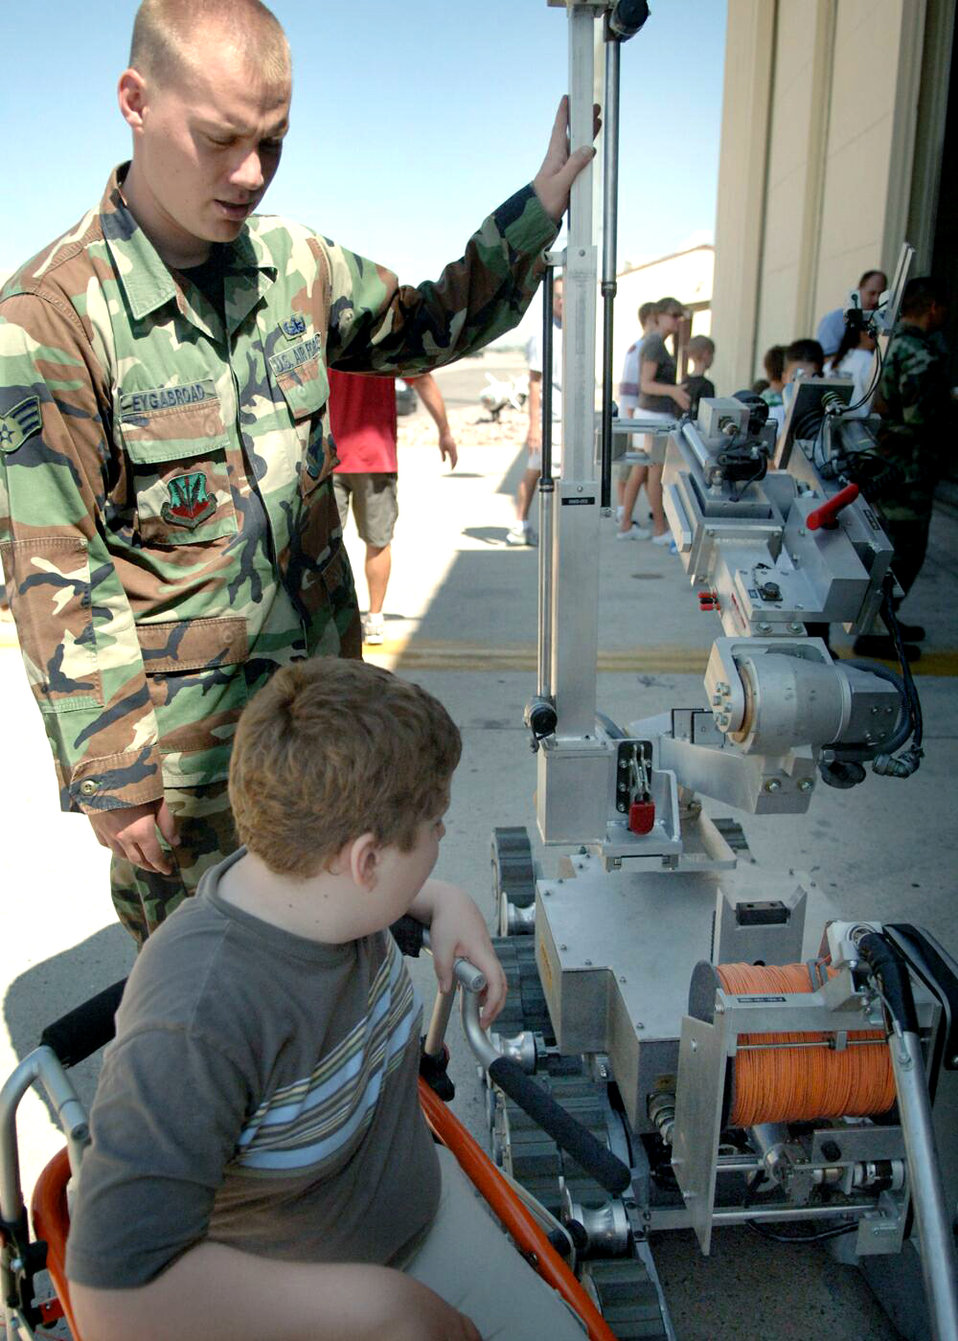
Make-A-Wish

Senior Airman Travis Eygabroad shows Lawton Lucas the explosive ordnance disposal robot during a tour of Davis-Monthan Air Force Base, Ariz., on July 17. The Make-A-Wish Foundation teamed with Davis-Monthan to offer a tour of the base for Lawton and other Make-A-Wish children as well as their families. The tour consisted of demonstrations by an EOD robot, base fire department and a weapons loading crew for an A-10 Thunderbolt II. Airman Eygabroad is an EOD technician from the 355th Civil Engineering Squadron.